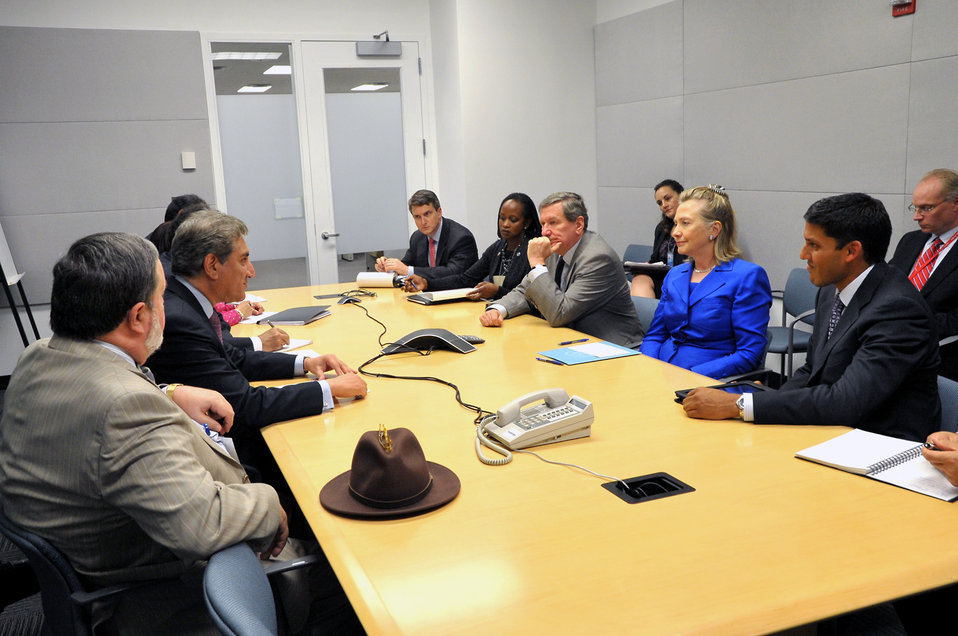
Secretary Clinton, Assistant Secretary Brimmer, Special Representative Holbrooke, and USAID Administrator Shah

U.S. Secretary of State Hillary Rodham Clinton (wearing blue), with U.S. Assistant Secretary for International Organization Affairs (second from left), Special Representative for Afghanistan and Pakistan Richard C. Holbrooke (third from right), and USAID Administrator Rajiv Shah (first from left), conducts a pull-aside with Pakistani Foreign Minister Mehmood Qureshi at the United Nations North Lawn Building in New York, New York, on September 19, 2010.